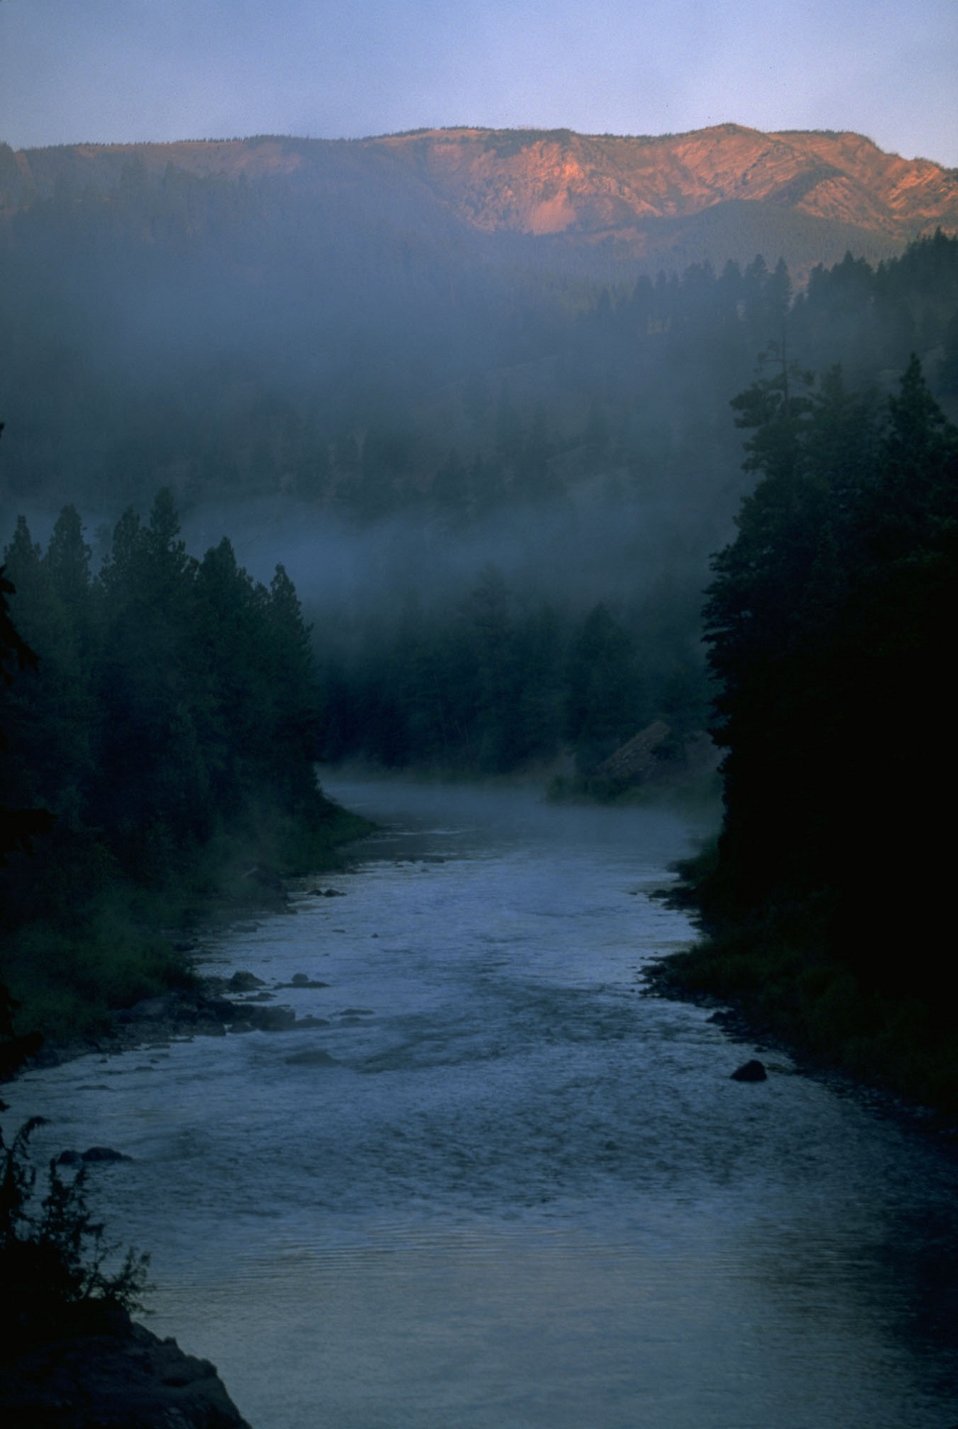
Fog at dawn on the Blackfoot River VERTICAL